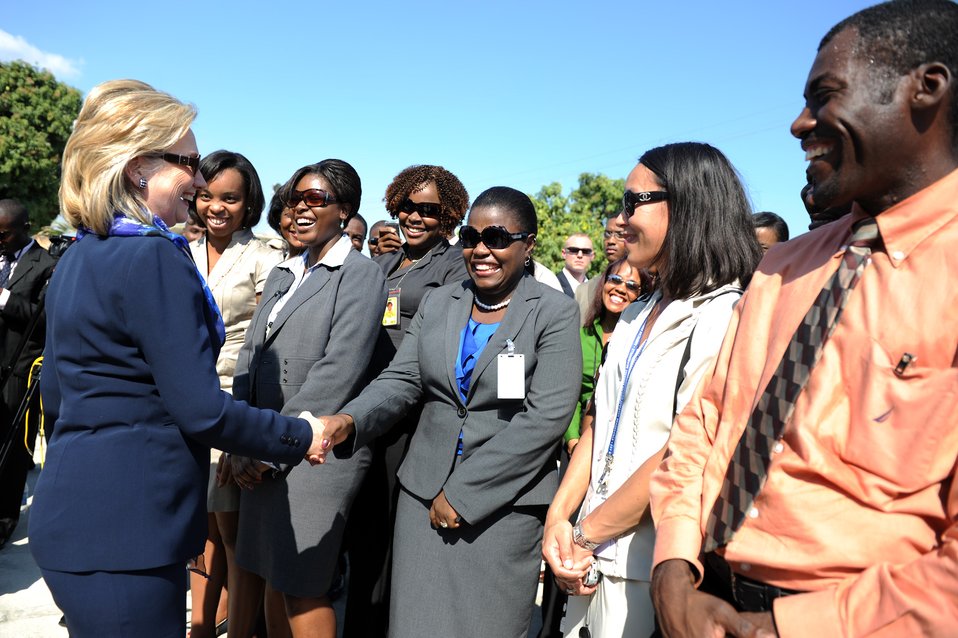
Secretary Clinton Thanks Embassy Port-au-Prince Staff

Secretary of State Hillary Clinton thanks U.S. Embassy Port-au-Prince staff for their work in Haiti, on January 30, 2011.